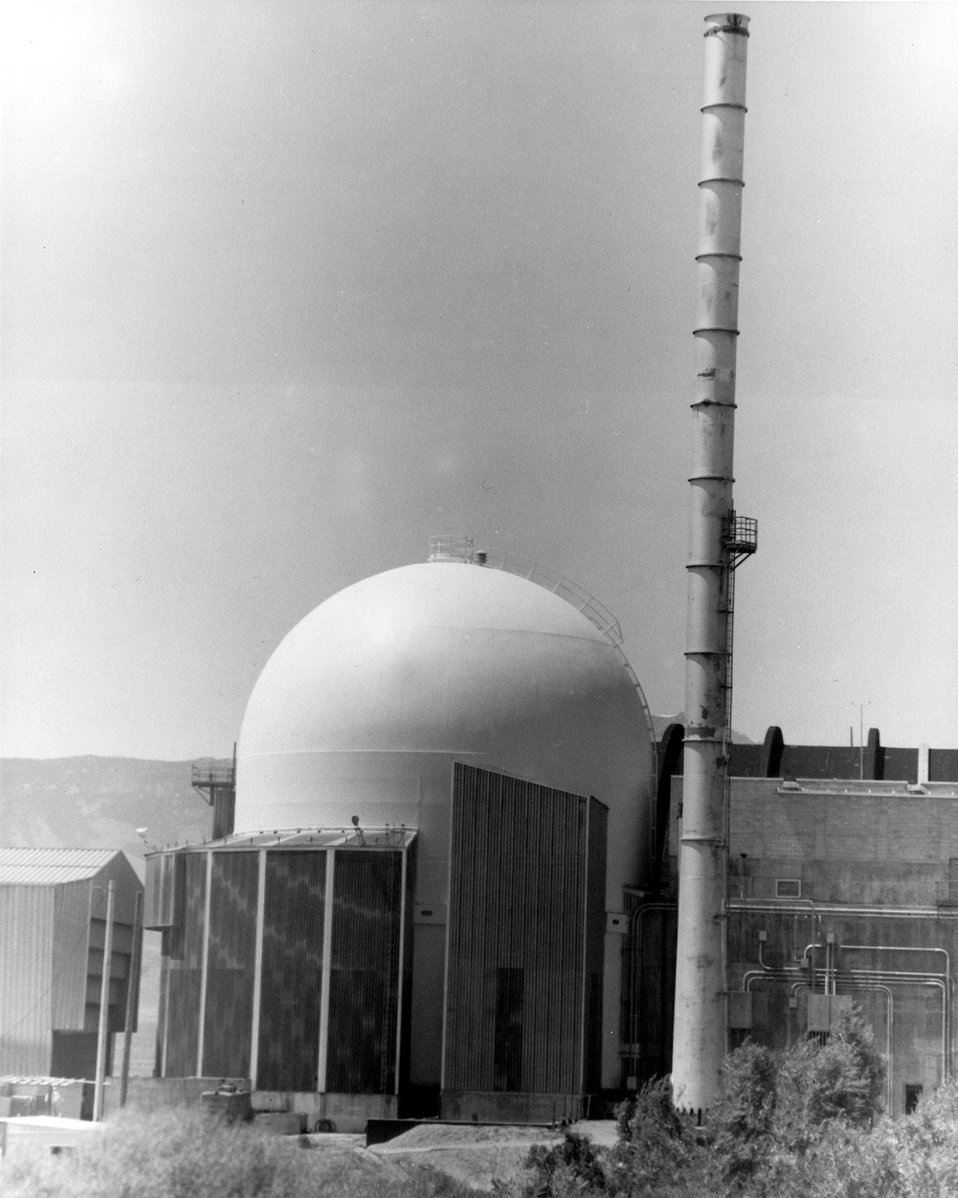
A view of the Loss of Fluid Test Facility at the Energy Research and Development Administration's Idaho National Engineering Laboratory. Circa 1975.